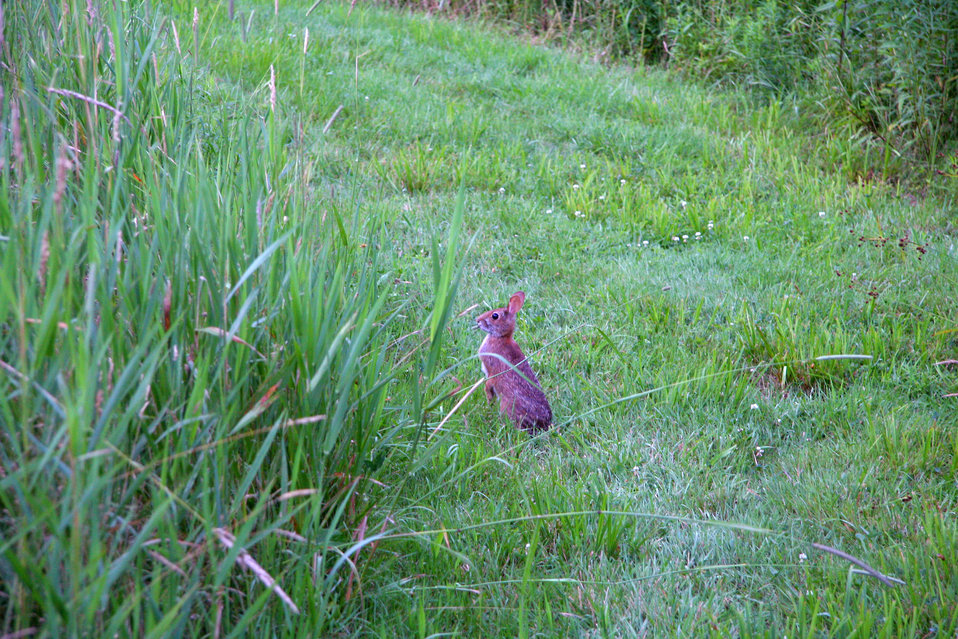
New England cottontail